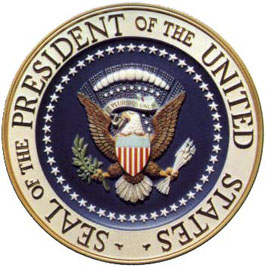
Presidental seal